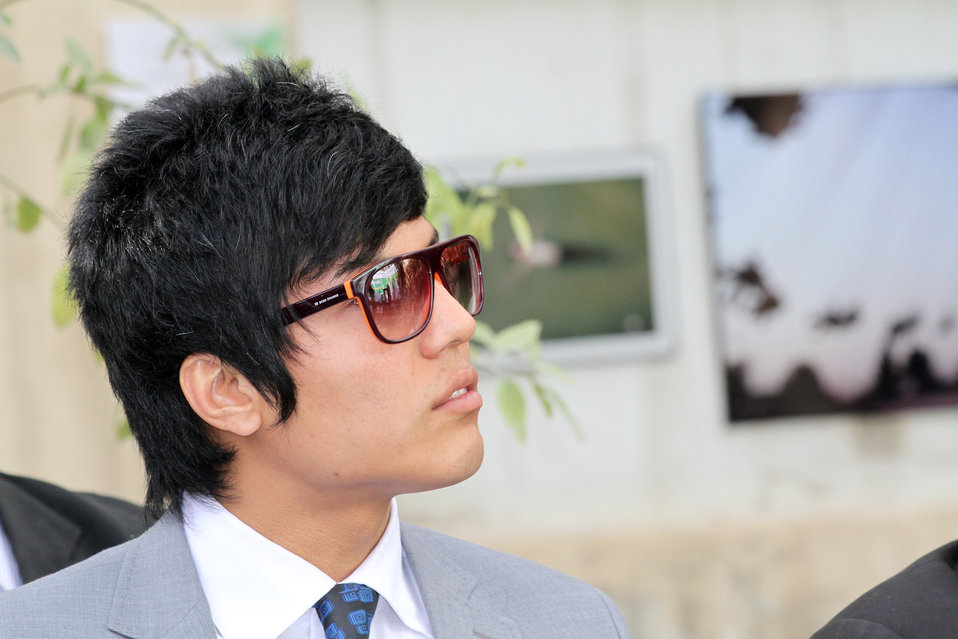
Afghan Youth Festival

Internews - USAID